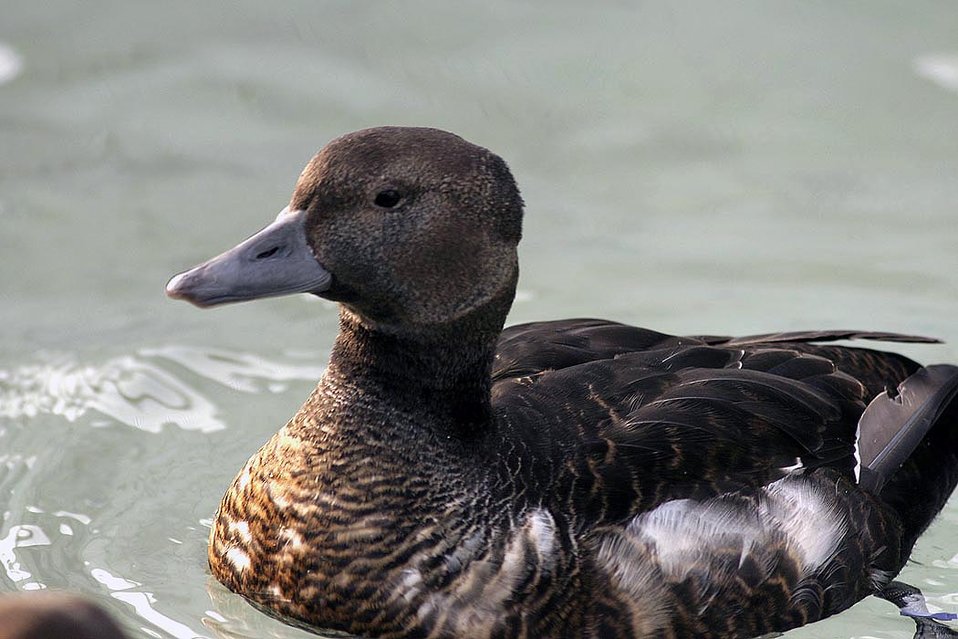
Threatened Steller's eider (Polysticta stelleri) female, Alaska SeaLife Center, Seward, Alaska